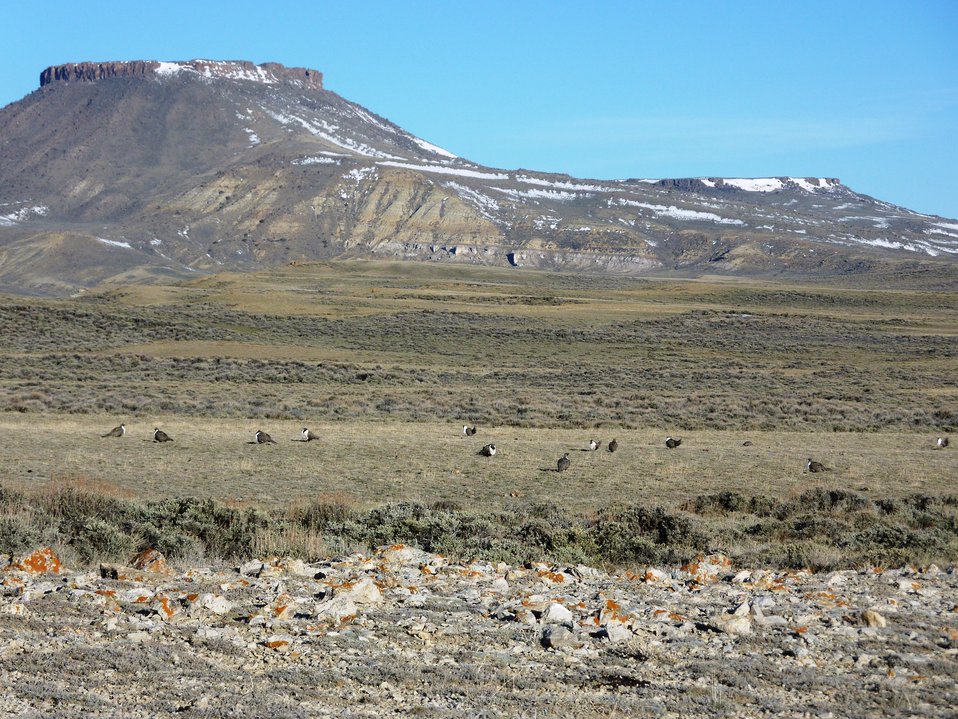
Greater Sage-Grouse in Red Desert, WY

This photo was taken during lek counts in April, 2010 in core sage-grouse habitat in south central Wyoming. North Table Rock is in background.

Location: Sweetwater County, WY

Credit: Mark Bellis / USFWS

Photo Contest Entry #65